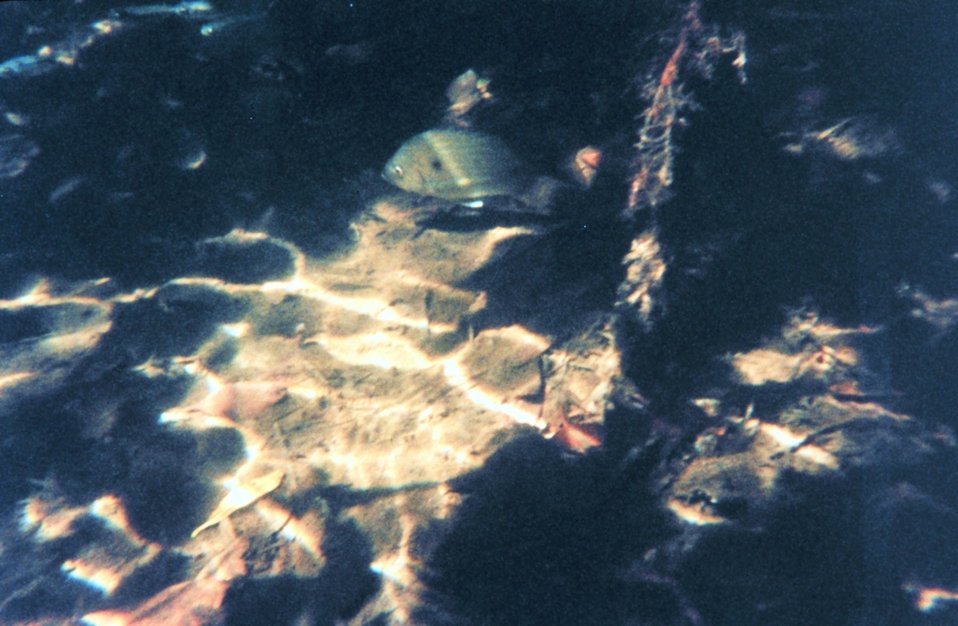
Pinfish seeking cover in mangrove roots